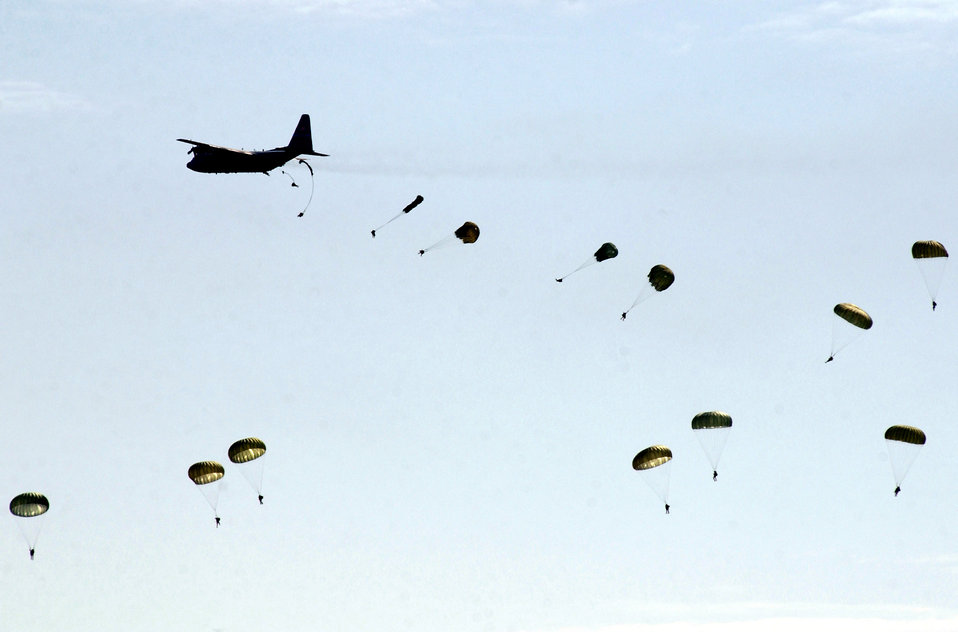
Operation All-American Lightning

SOUTHWEST ASIA -- Soldiers from the 82nd Airborne Division jump from a C-130 Hercules as part of Operation All-American Lightning on Feb. 24. A total of 240 soldiers jumped during a capabilities and show-of-force exercise. Before the start of the parachute jumps, A-10 Thunderbolt IIs conducted missile and strafing runs, and F-16 Fighting Falcons dropped 12 bombs on a simulated target near the airfield as part of the exercise.